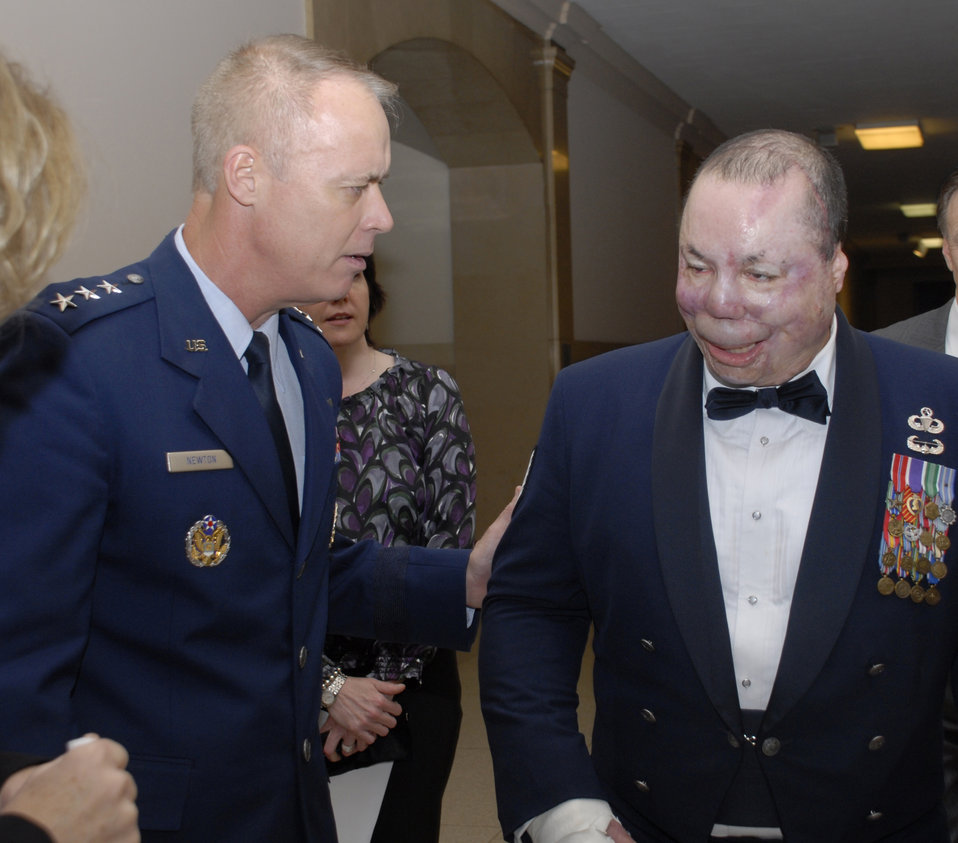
USO salutes wounded warriors in NYC

Lt. Gen. Dick Newton, deputy chief of staff for manpower and personnel at Air Force Headquarters, talks with Tech. Sgt. Israel Del Toro during this year's United Service Organizations'